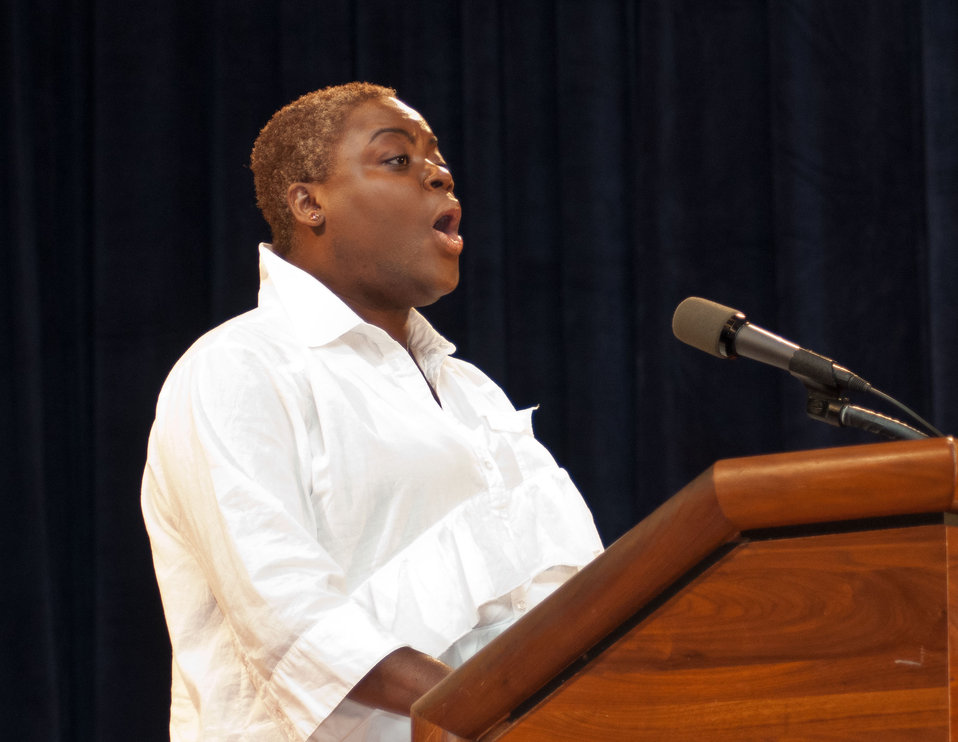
U.S. Department of Agriculture (USDA) Food Safety and Inspection Service Contract Specialist Ms. Vangelia Campbell sang the National Anthem during the presentation of the colors during the U.S. Department of Agriculture (USDA) Lesbian, Gay, Bisexual and Transgender (LGBT) Pride Observance Program in the Jefferson Auditorium, on Thursday, June 2, 2011, in Washington, DC.